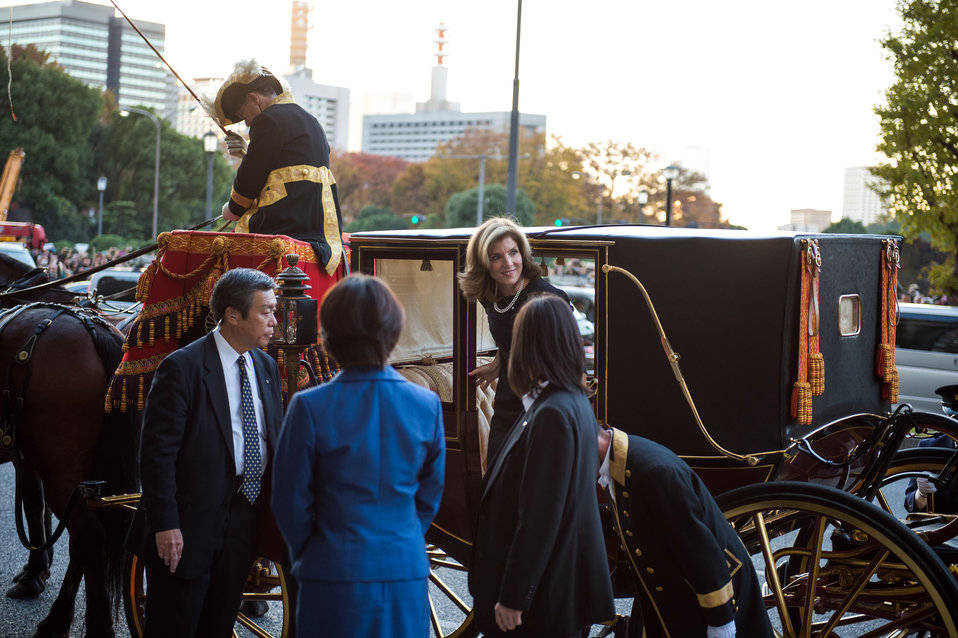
Ambassador Kennedy After the Presentation of Credentials Ceremony

U.S. Ambassador to Japan Caroline Kennedy returns from the Imperial Palace, where she presented her credentials to His Imperial Majesty Emperor Akihito, in Tokyo, Japan, on November 19, 2013.